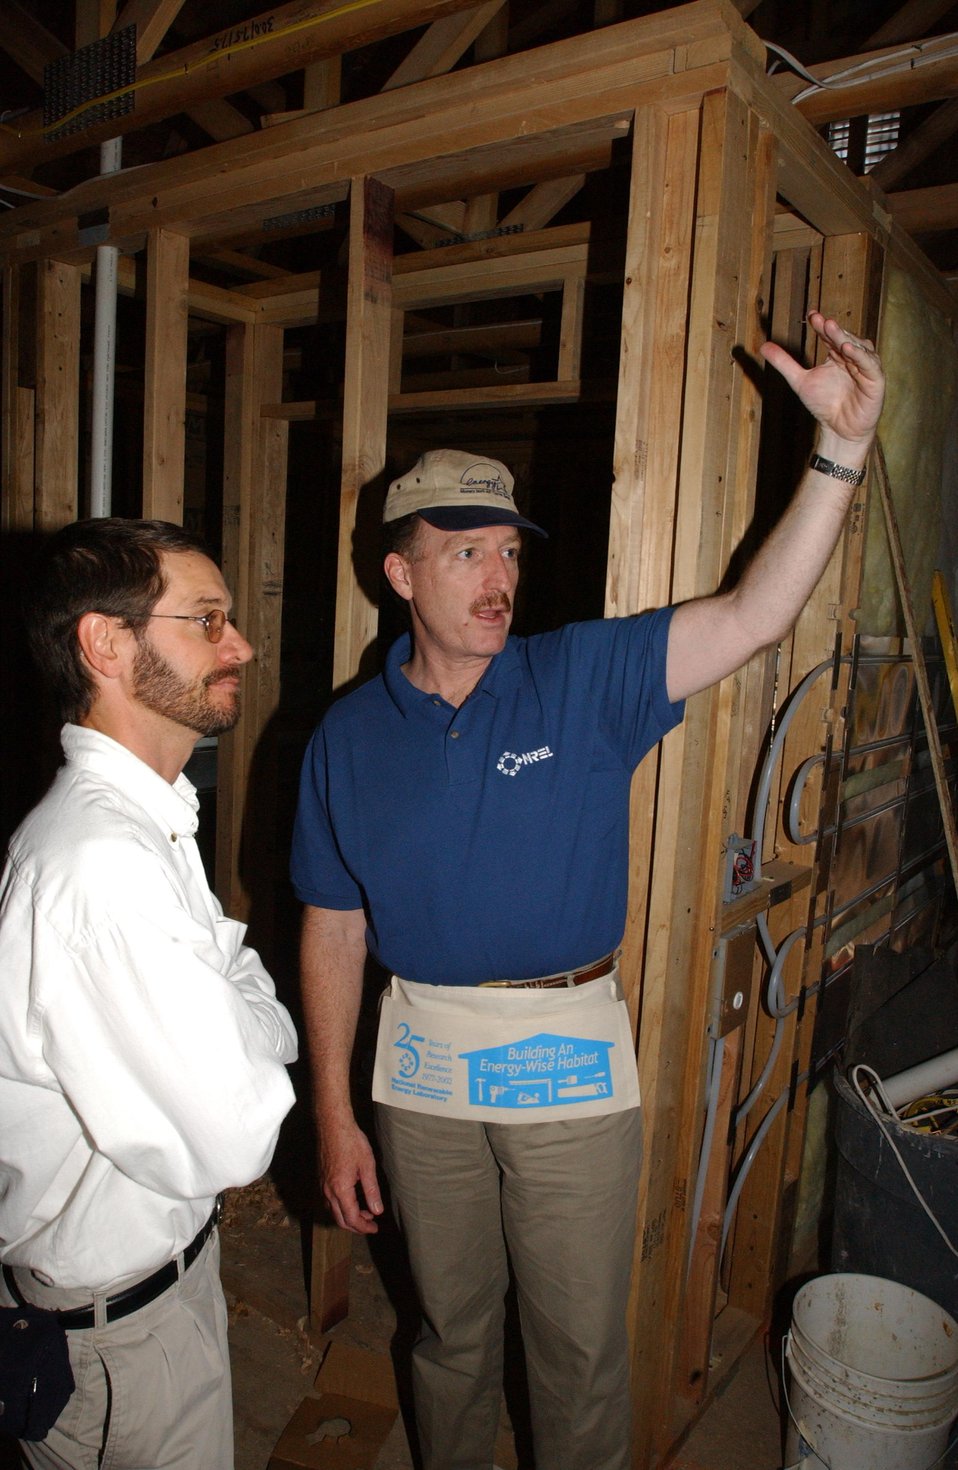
DAVID GARMAN, DOE ASSISTANT SECRETARY FOR ENERGY EFFICIENCY AND NREL'S PAUL NORTON DISCUSS CONSTRUCTION OF HABITAT FOR HUMANITY HOUSE.

ASSISTANT SECRETARY GARMAN TOURED THE NATIONAL RENEWABLE ENERGY LABORATORY, JULY 18, 2002 AND PARTICIPATED IN THE CONSTRUCTION OF THE HABITAT FOR HUMANITY HOUSE. NREL'S COMMITMENT TO THE BUILDING CALLS FOR 3,000 VOLUNTEER HOURS. EACH HOUSE BUILT BY HABITAT FOR HUMANITY OF METRO DENVER INCLUDES ENERGY EFFICIENT APPLIANCES, COMPACT FLUORESCENT LIGHTS, PROGRAMMABLE THERMOSTATS AND INSULATED WINDOWS.